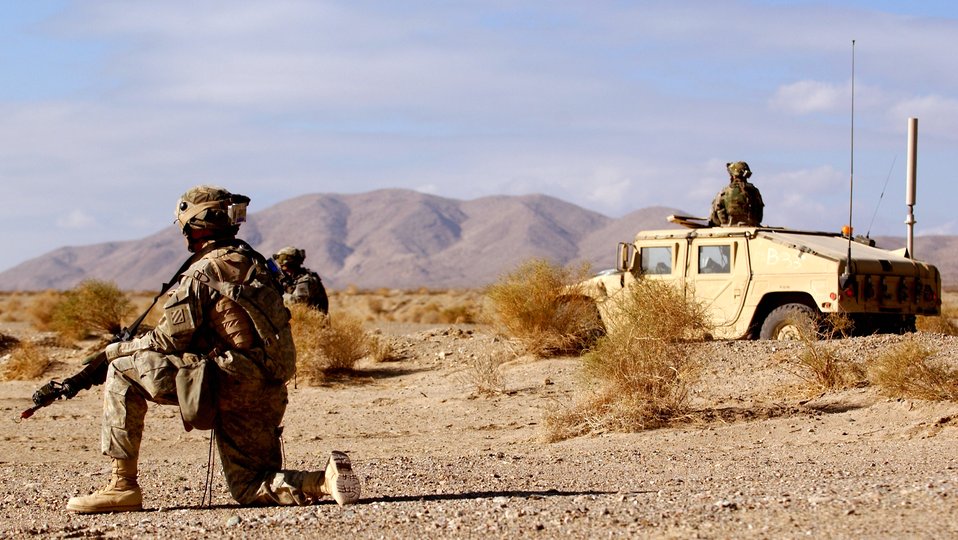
Airmen, Soldiers prepare for Iraq

Airmen and Soldiers take part in a route clearance training scenario Jan. 22 at the National Training Center at Fort Irwin, Calif. Soldiers and Airmen are trained in a number of different scenarios that will help better prepare themselves for Iraq.